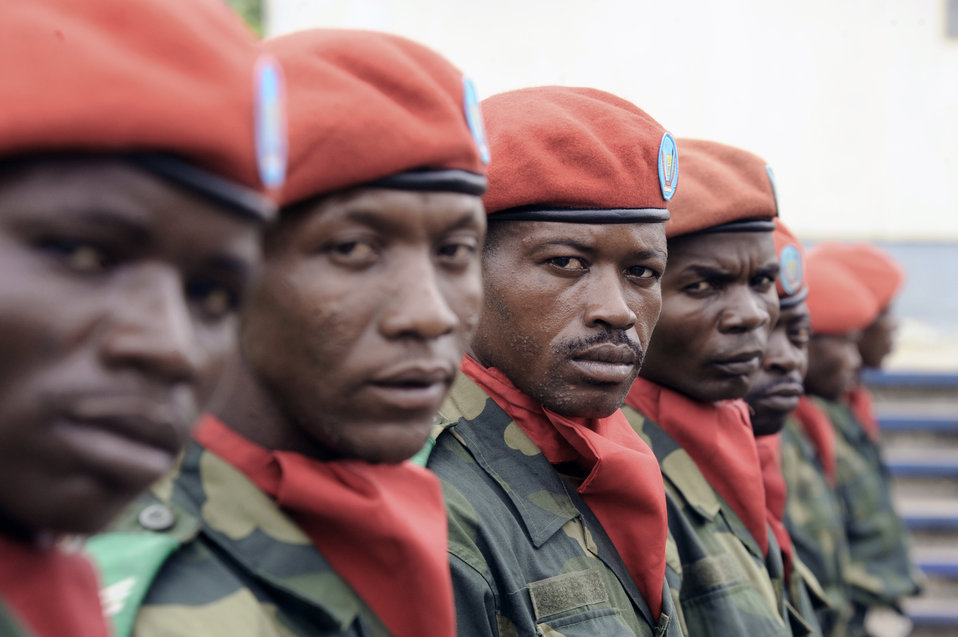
MEDLITE 11

Members of the Democratic Republic of the Congo's military police force line up to prepare for a distinguished visitor entrance during the opening ceremonies for the MEDLITE 11 exercise April 25, 2011, in Kinshasa, Democratic Republic of the Congo. MEDLITE 11 is a joint medical exercise focused on aeromedical evacuation, to improve the readiness of U.S. Air Force and DRC personnel.